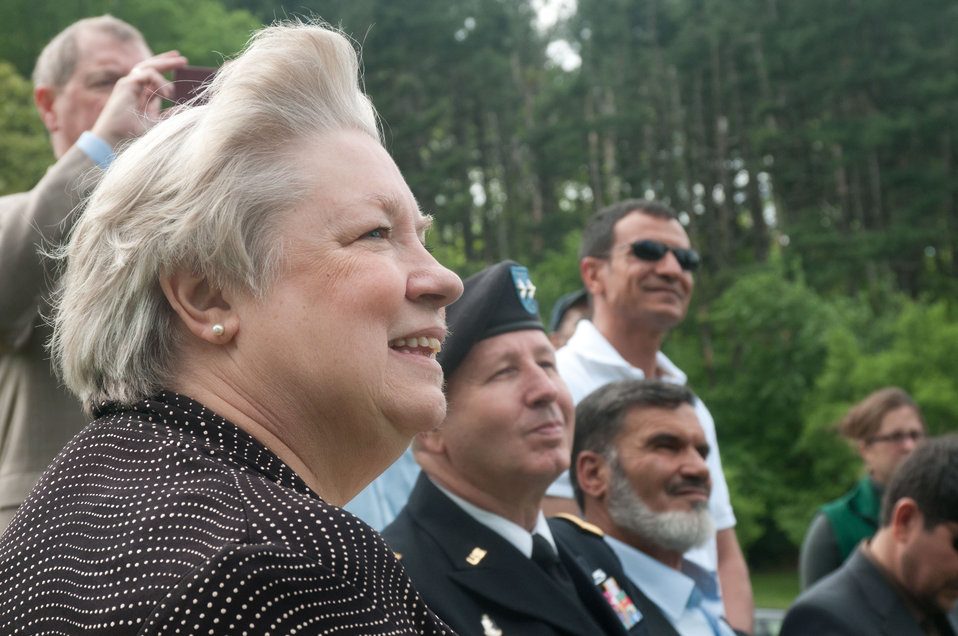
(l-r) Director of U.S. National Arboretum Dr. Colien Hefferan; Special Assistant to the Director, Army National Guard Major General Darren Owens and Ghazni Directorate of Agricultural Irrigation and Livestock Sultan Hossain listen to Agriculture Deputy Under Secretary of Farm and Foreign Agricultural Services Darci Vetter speech , during the Arbor Day tree planting of a Cedrus deodara ('Karl Fuchs') at the Arboretum. The tree is originally from Pakta Province and the most important tree in Afghanistan for timber.